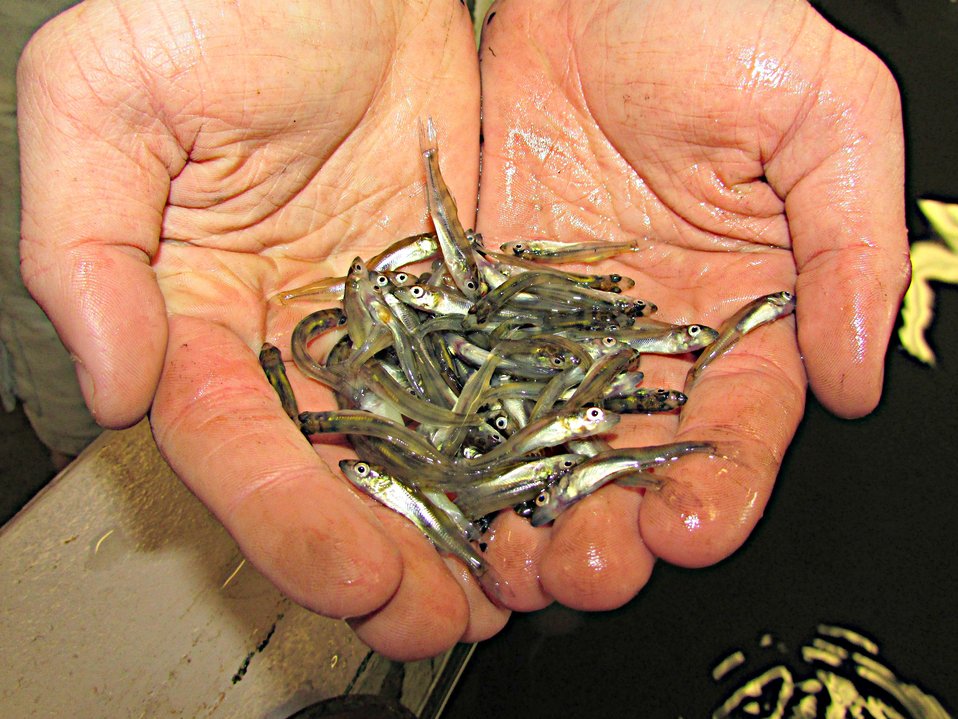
Walleye Fingerling

We just stocked out our remaining walleye this week, closing the book on our 2013 walleye season.

Just how important are walleye to our state? It's estimated that about 500,000 are harvested in the Missouri River alone each year. They are the most sought after fish in our waters and anglers spend over 1.3 million hours a year fishing for them. That means major dollars going into fishing licences, gear, bait and local businesses!

These young walleye are our fisheries future.